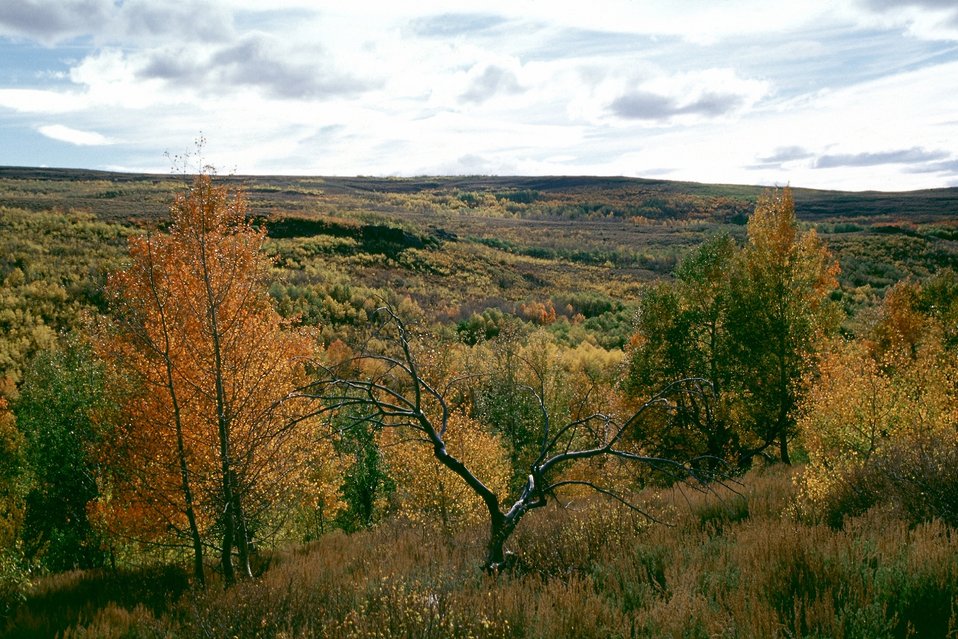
Aspens at Fish Creek, Steen's Mountain.